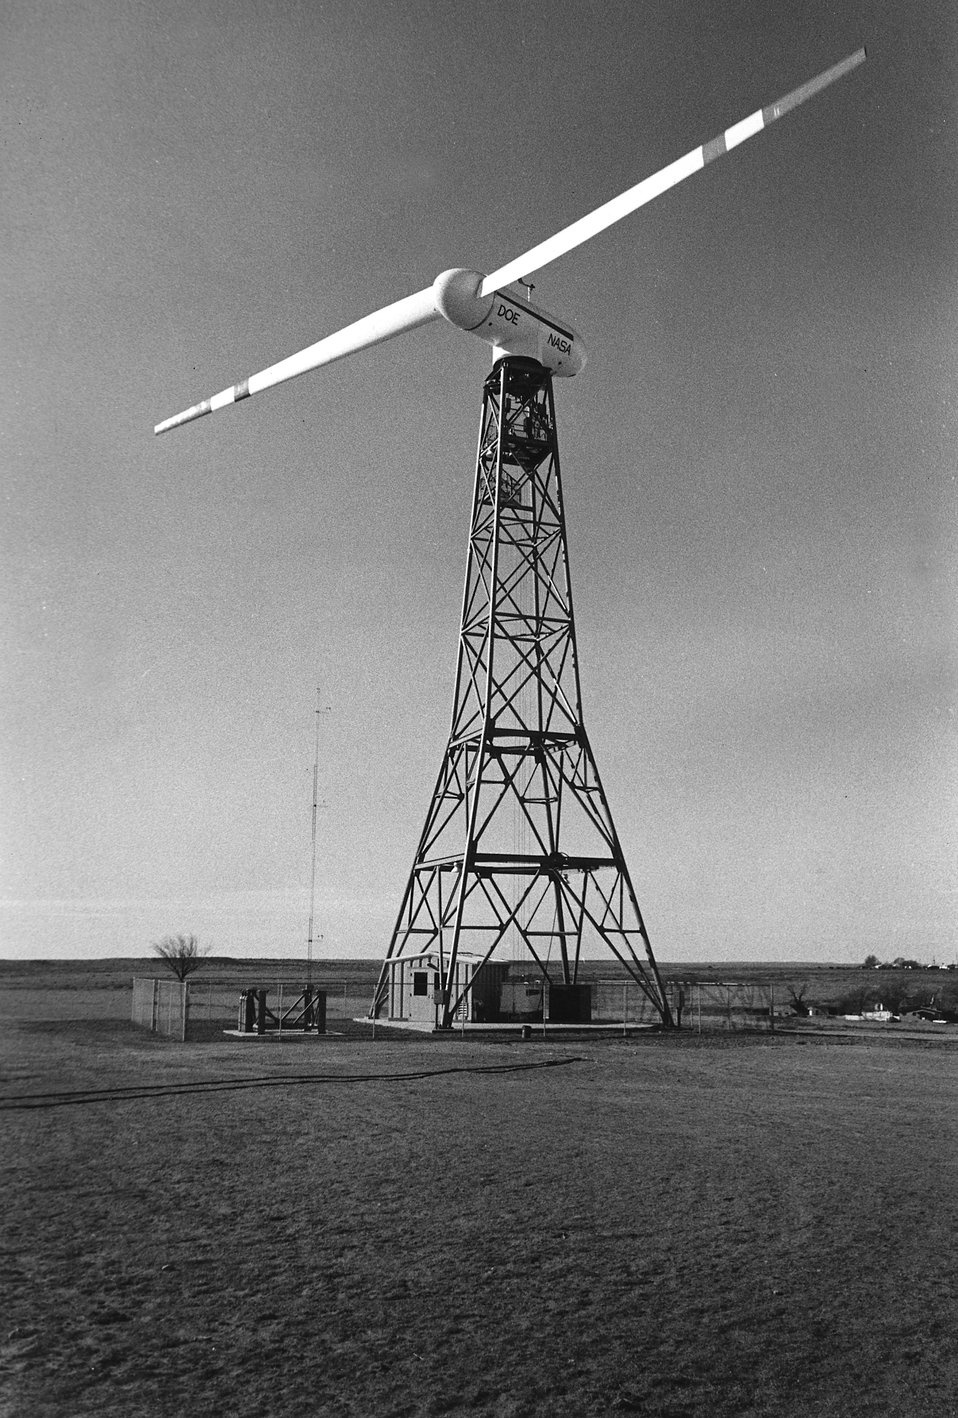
A large wind turbine generator is supplying part of the electric power used by the people of Clayton, New Mexico. c. 1978